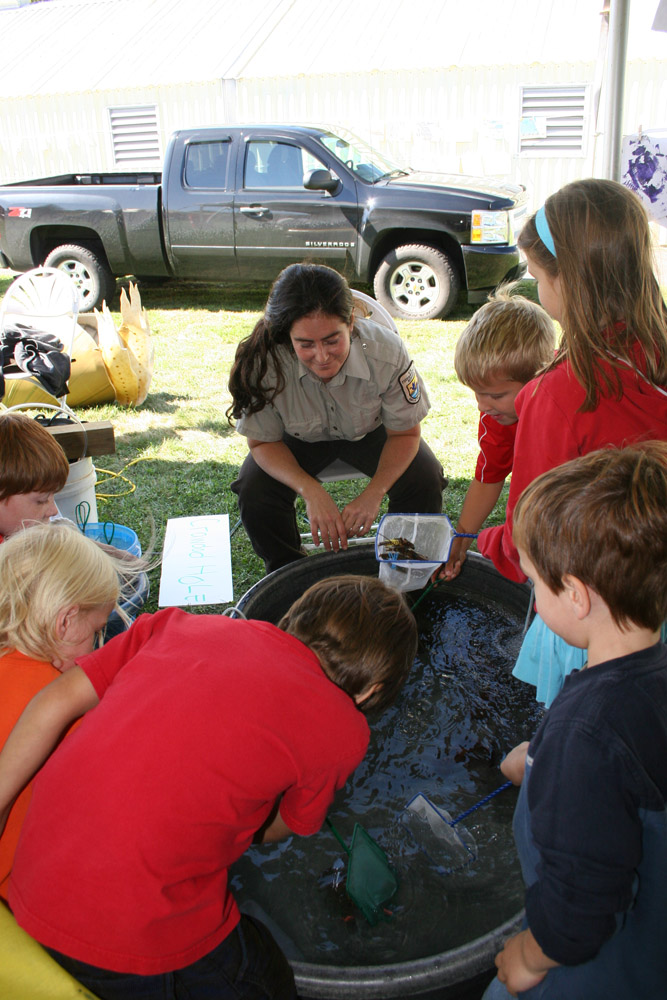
Freshwater Folk Festival (85)

The 5th Annual Freshwater Folk Festival at White Sulphur Springs National Fish Hatchery in West Virginia.